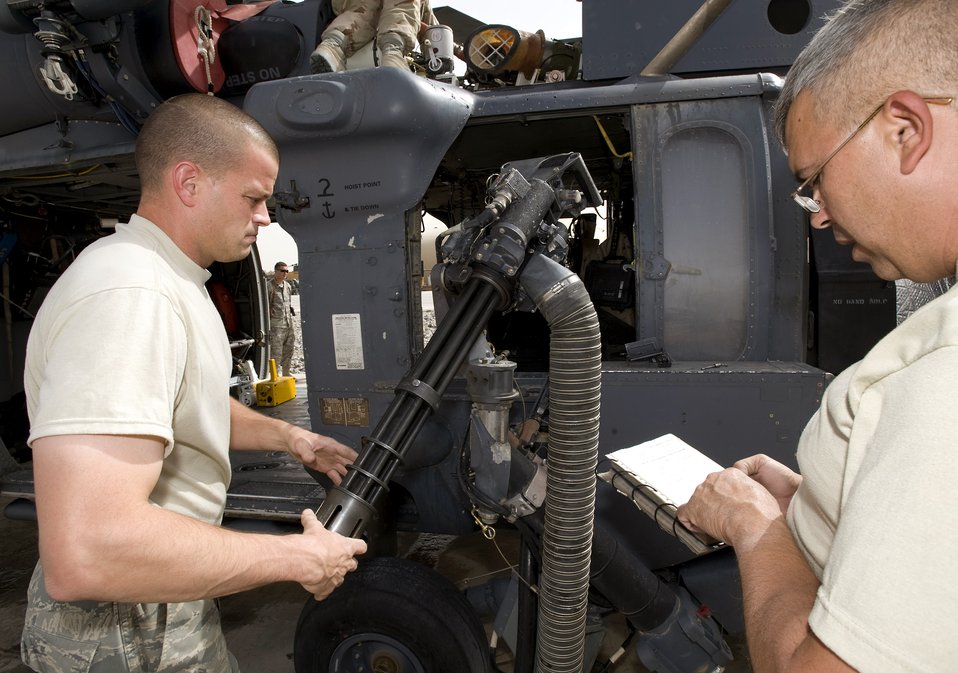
Airmen enhance Army medical evacuation mission

Tech. Sgt. Gary Reinhardt reads from a check list as Tech. Sgt. Mark Christie installs a mini-gun on an HH-60 Pave Hawk prior to a flight Aug. 15 at Kandahar Air Base, Afghanistan. The HH-60 and crews who fly and maintain them are assigned to the 305th Expeditionary Rescue Squadron from Davis-Monthan Air Force Base, Ariz.